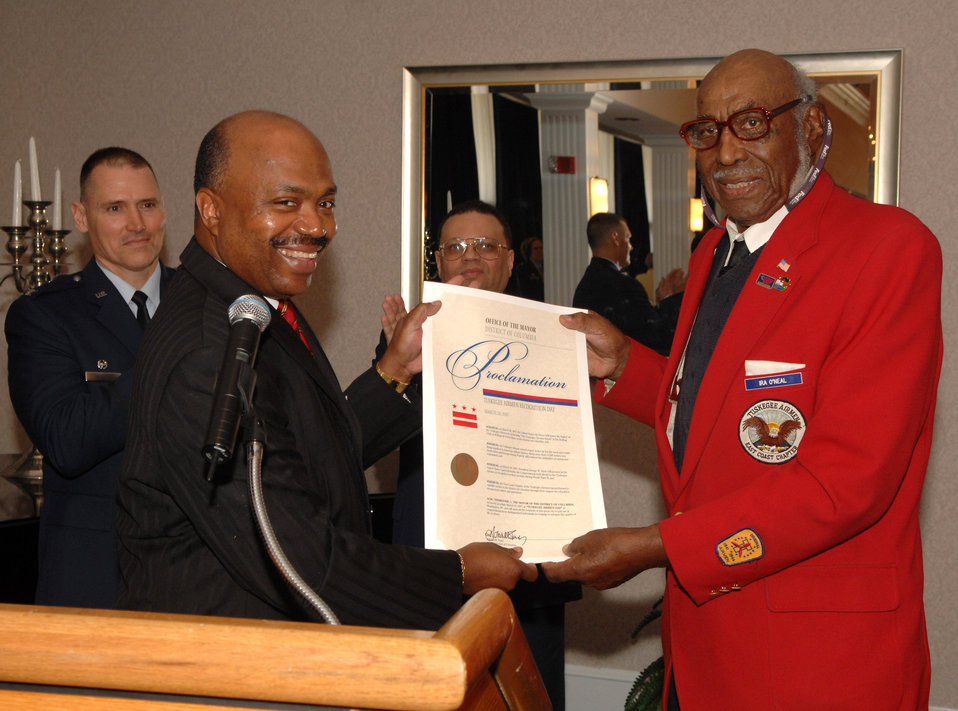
Kerwin Miller, executive office of Veterans Affairs, presents Ira O'Neal with a proclamation paper declaring Tuskegee Airman Day in Washington, D.C., at the dedication ceremony of the